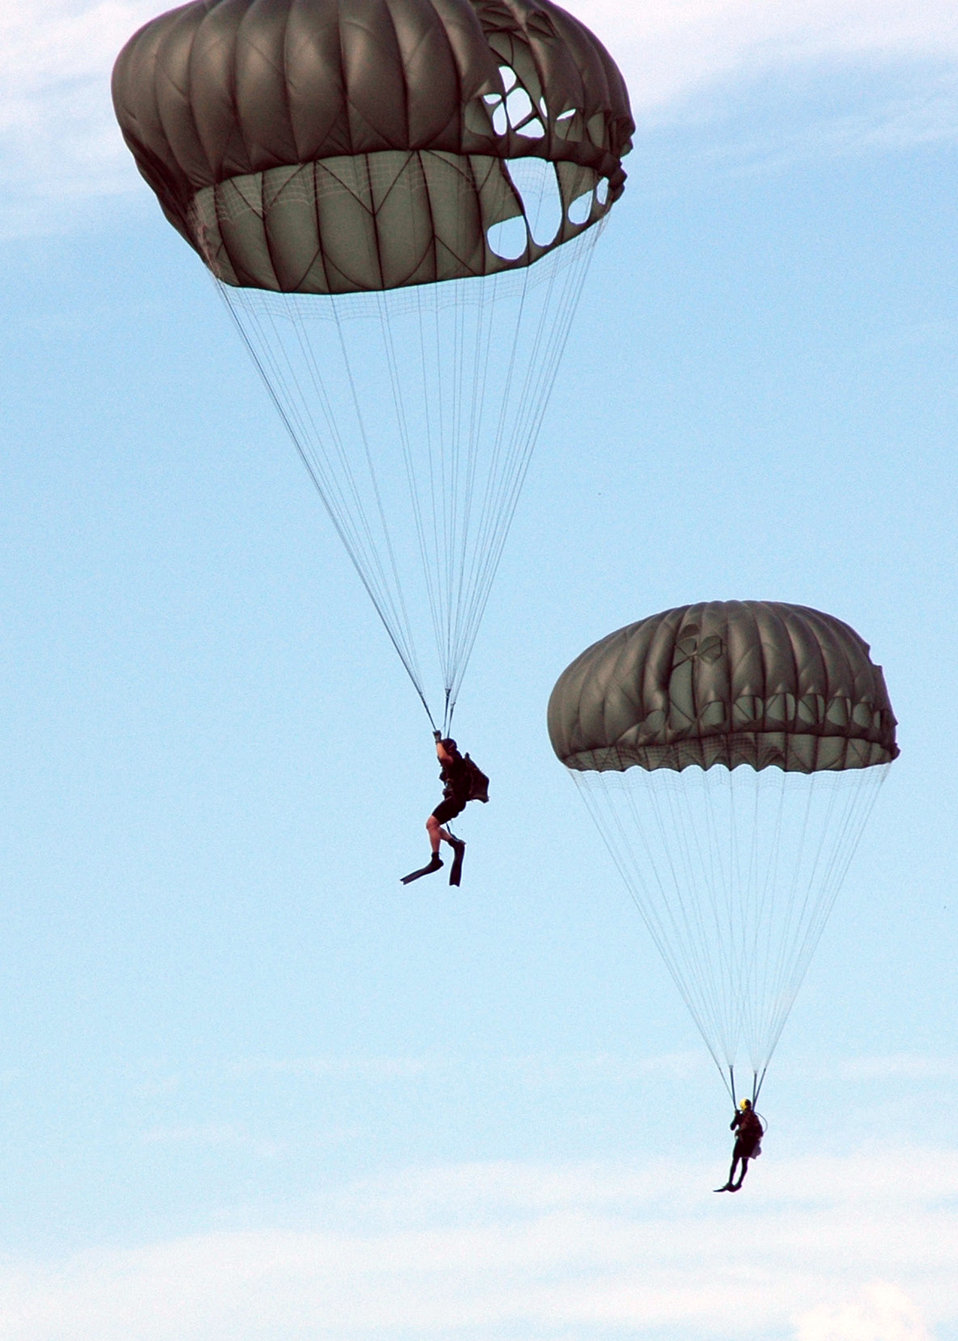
In the Drop Zone

PJ trainees parachute into the Banana River.